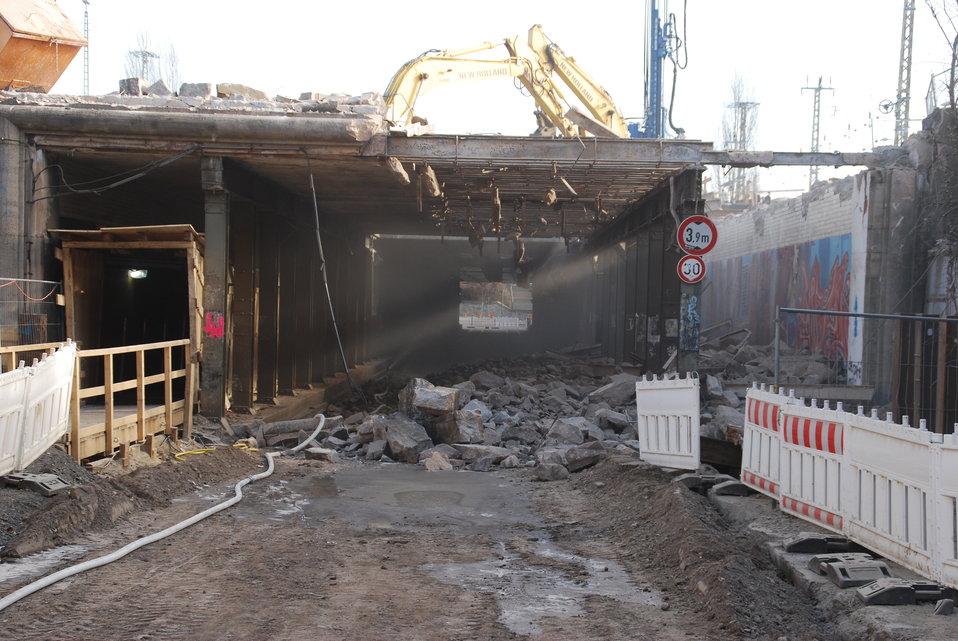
Abriss Bahnhofstunnel Frankfurt (Oder)